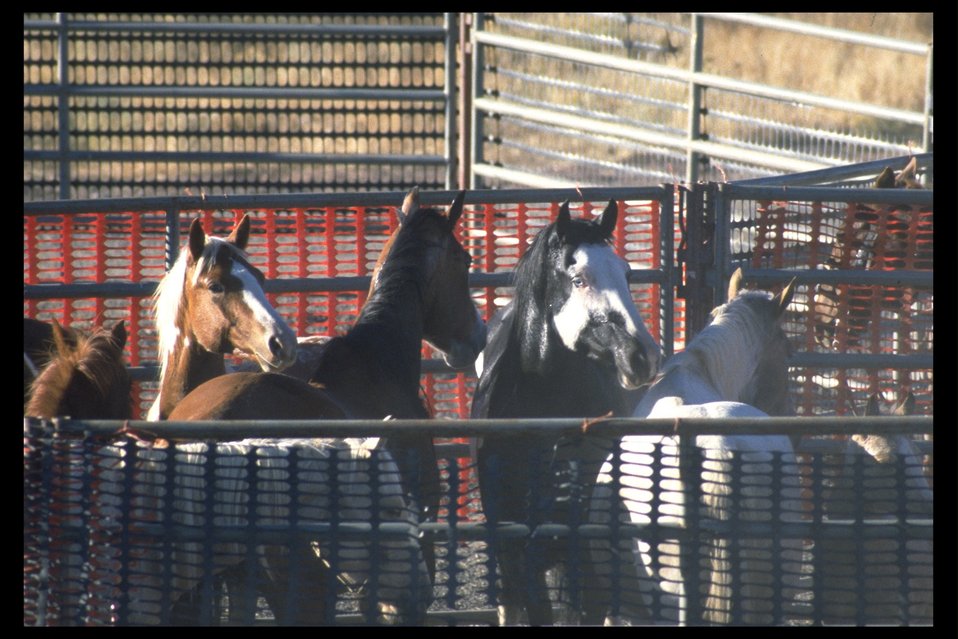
South Steens wild horses at a trap in the Burns District.